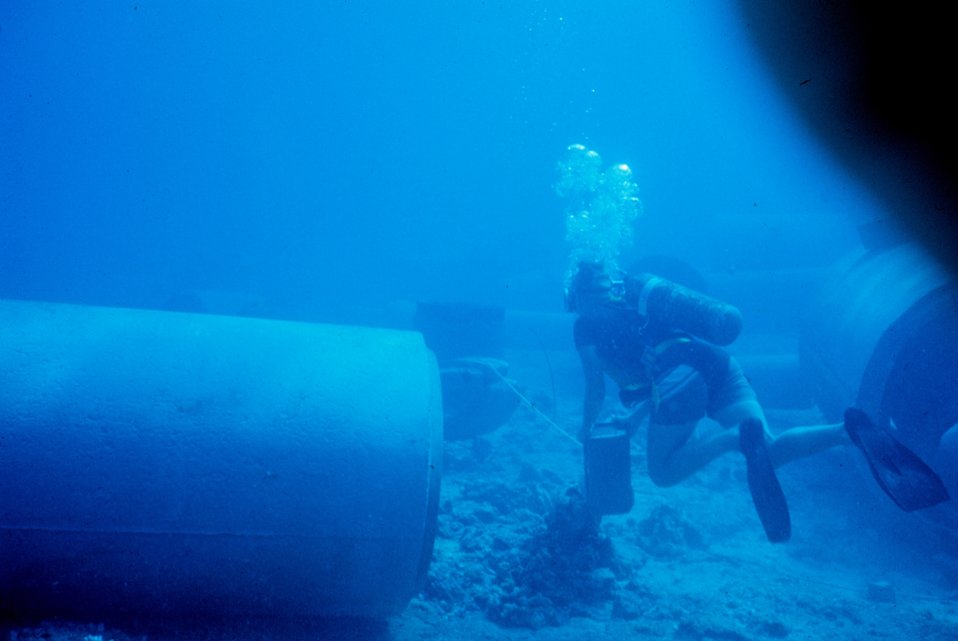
Diver laying transect line for conducting fish survey.